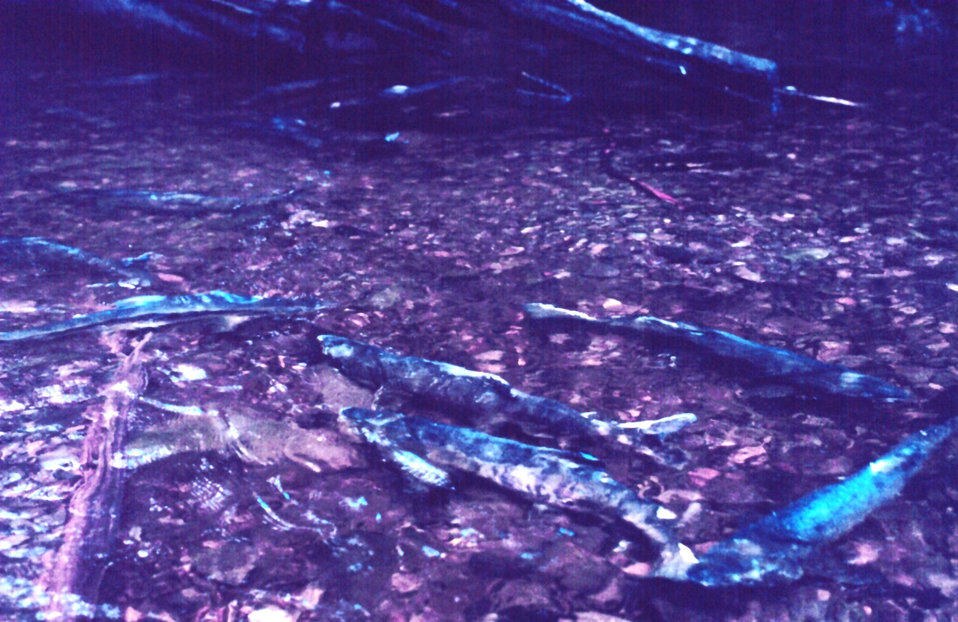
Spawning salmon